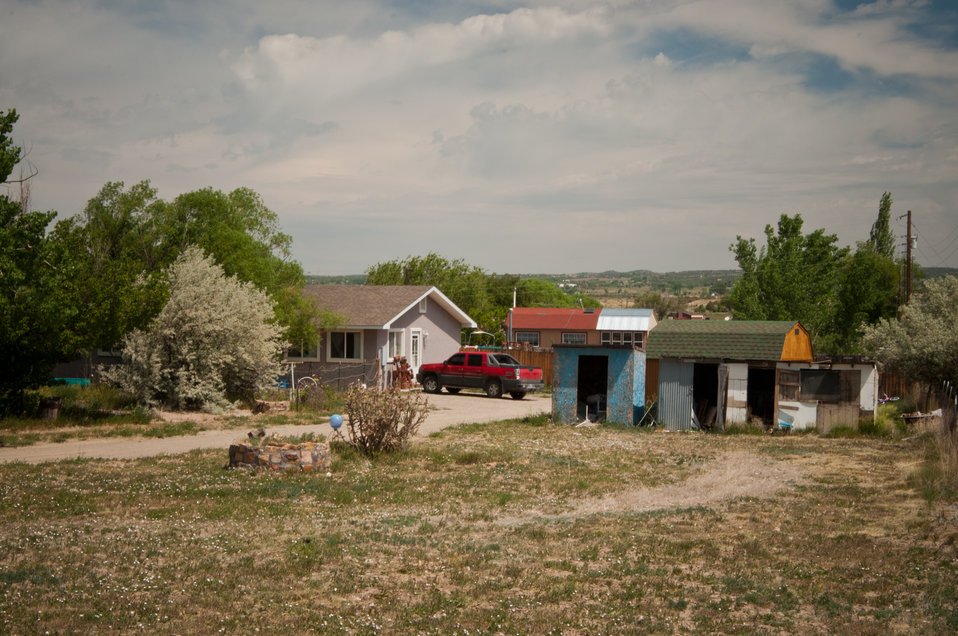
The U.S. Department of Agriculture (USDA) StrikeForce Initiative in cooperation with public and private organizations offers many economic grants, loans and conservation contracts through USDA's Rural Development (RD) and the Natural Resources of Conservation Service (NRCS) for areas of rural America with a high percentage of people living below the poverty level and considered economically distressed.